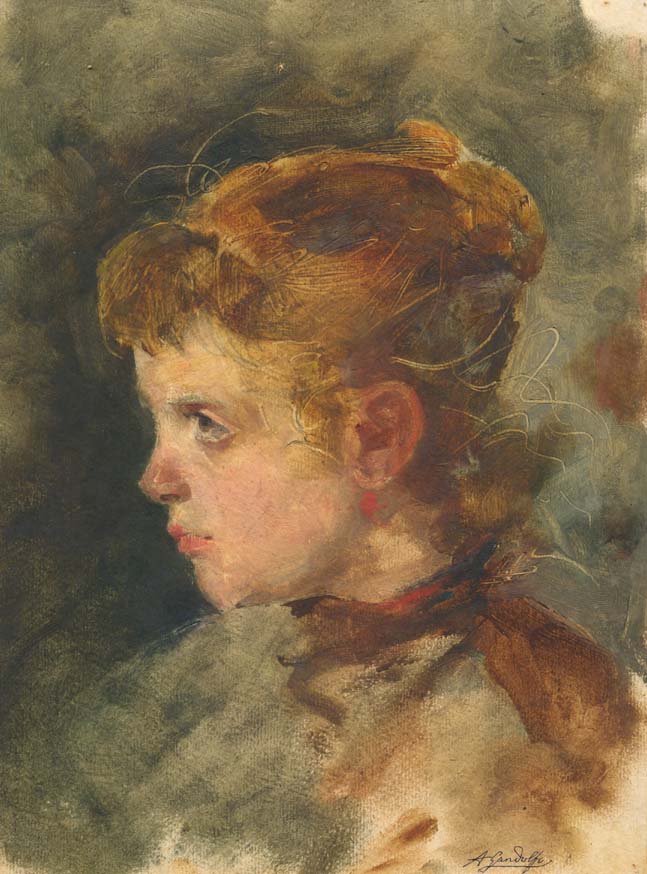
A gandolfo ritratto di bimba